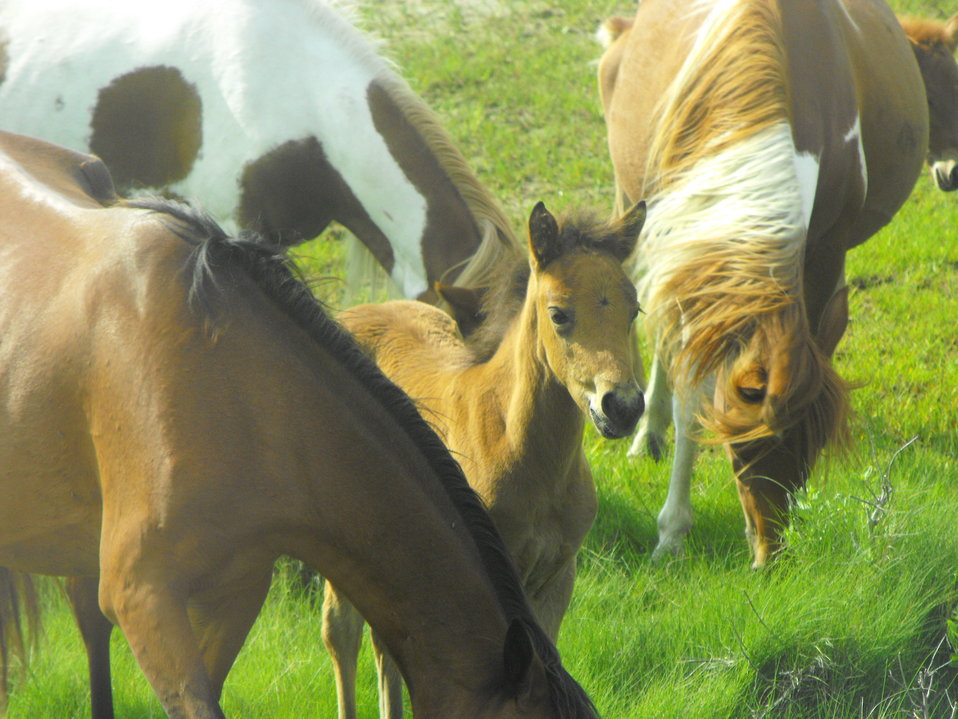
Chincoteague ponies

A foal feeds with its band of Chincoteague ponies off the Service Road at Chincoteague National Wildlife Refuge.